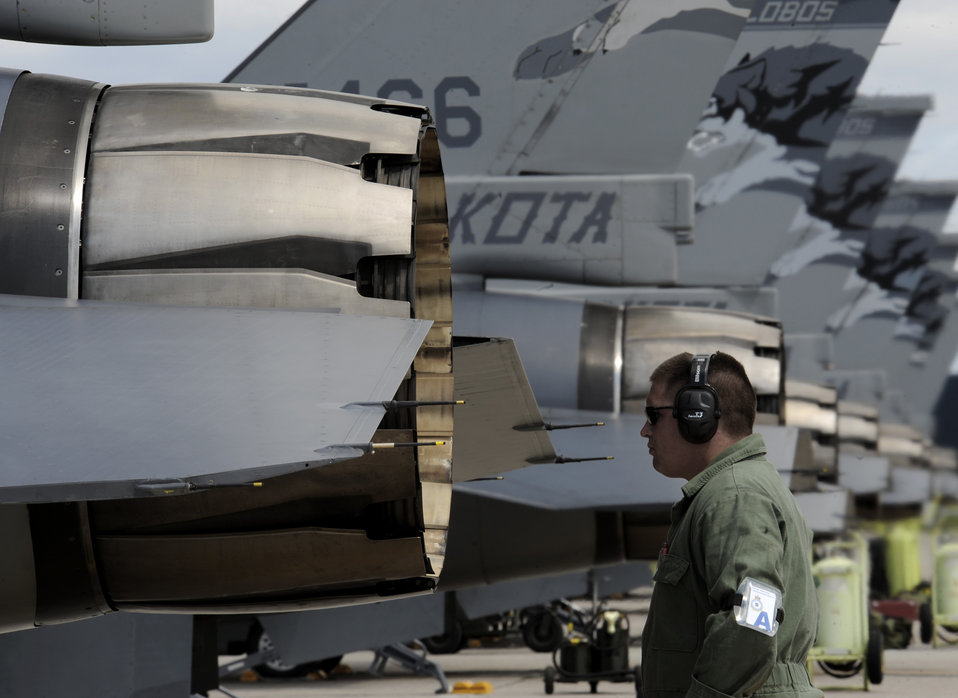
Maple Flag 42

Staff Sgt. Adam Dolney, an F-16 Fighting Falcon crew chief, assigned to the 114th Fighter Wing, Sioux Falls, S.D. Air National Guard, examines the exhaust in preparation for a training mission during exercise Maple Flag 42 at 4 Wing Cold Lake, Canada, June 4. Maple Flag is a Canadian-sponsored and Air Combat Command supported exercise that provides aircrews simulated air and ground combat training to coalition forces in a NATO environment.